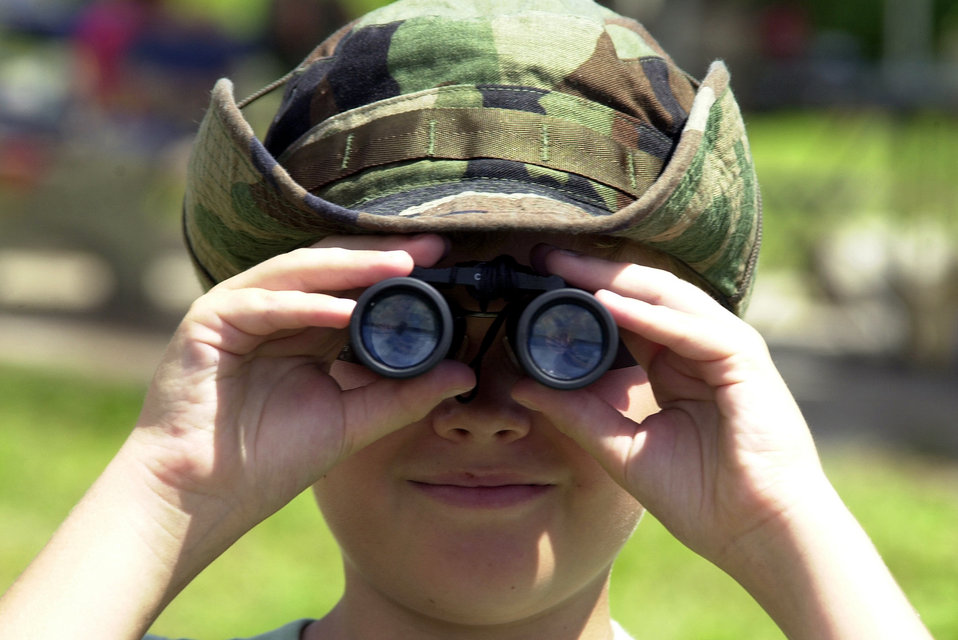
Can you see me now?

ANDERSEN AIR BASE, Guam -- Boy Scout Tony Heath surveys the reef while looking for birds from base camp at Scout Beach here July 24. The Scouts held a weeklong camp where they earned merit badges by participating in various events. Heath is the son of Maj. Douglas Heath of the 13th Air Force.